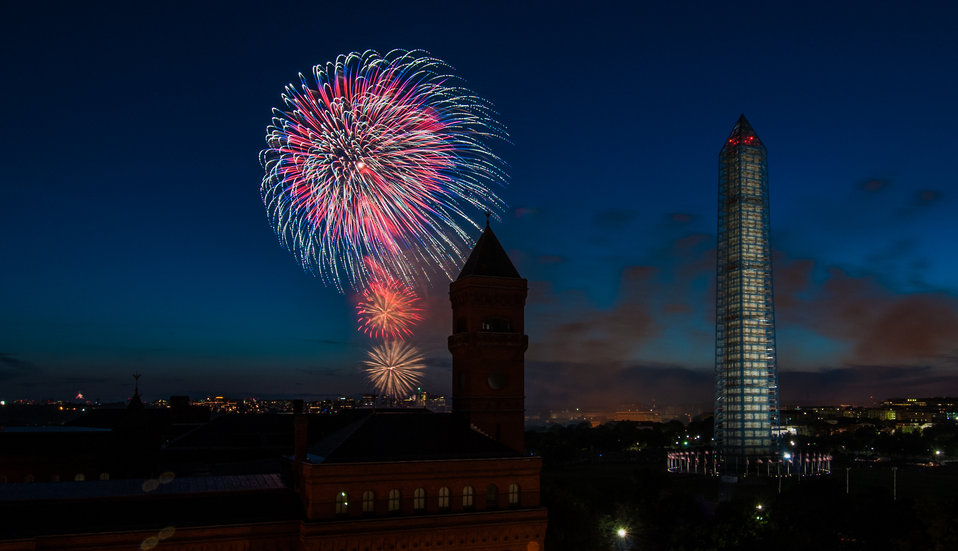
4th of July fireworks as seen from the U.S. Department of Agriculture (USDA) headquarters building, with the USDA Forest Service Yates Building in the foreground, left, and the Washington Monument in Washington, D.C., on July 4, 2013.